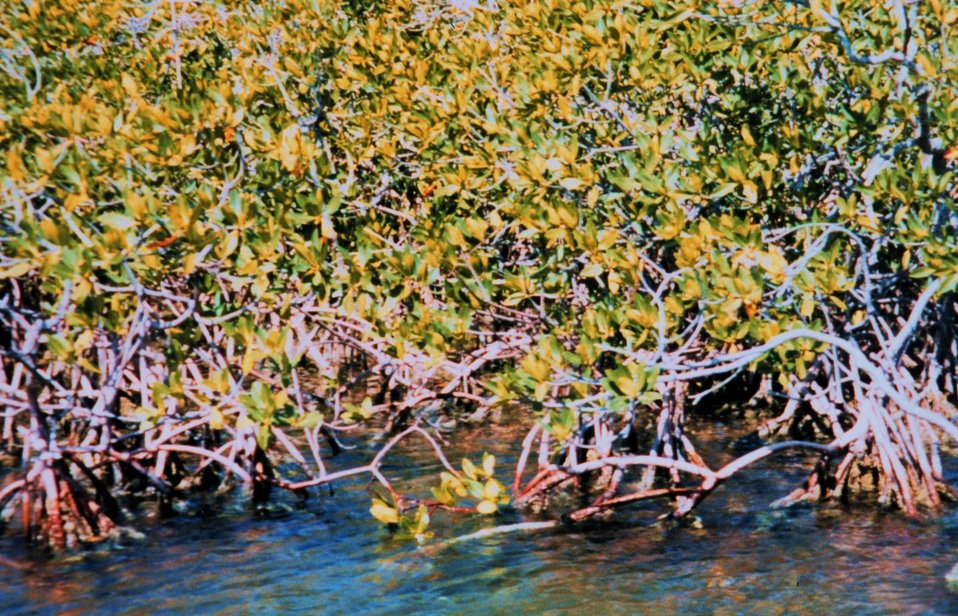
Typical red mangrove with prop roots - characteristic of high salinity area